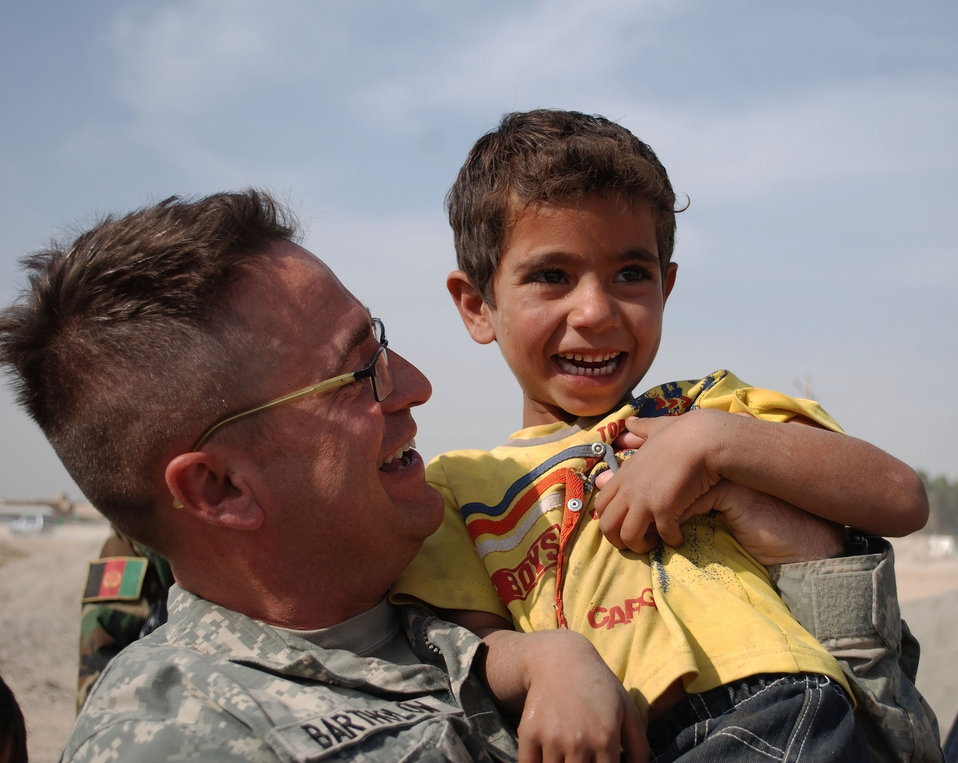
'On the Road' in Balkh Province